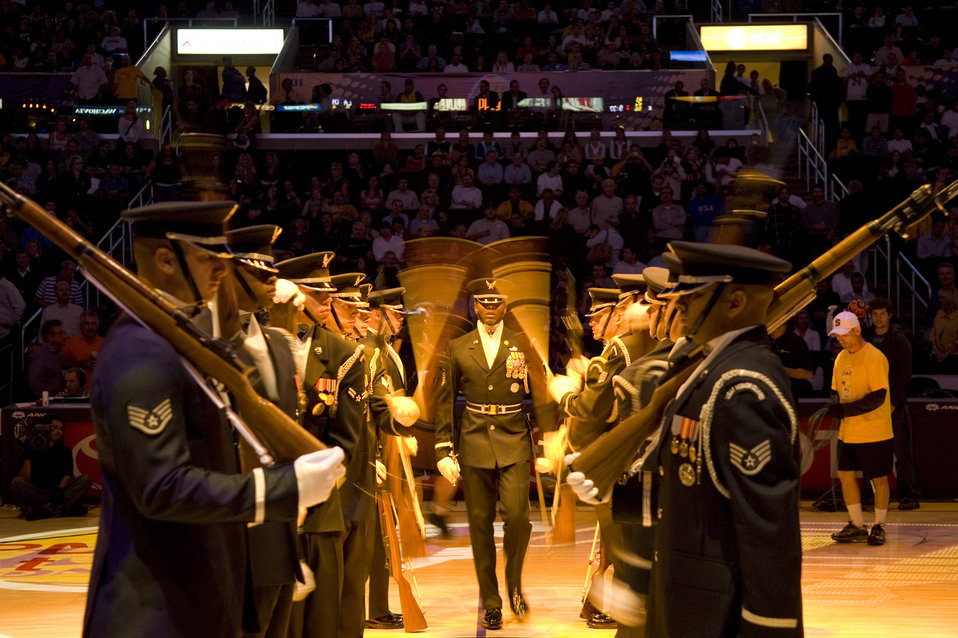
Air Force takes center stage as Bulls visit Lakers

The Air Force Honor Guard drill team performs during a nationally telecast Chicago Bulls and Los Angeles Lakers basketball game in front of nearly 20,000 fans Nov. 18 at the Staples Center in Los Angeles.